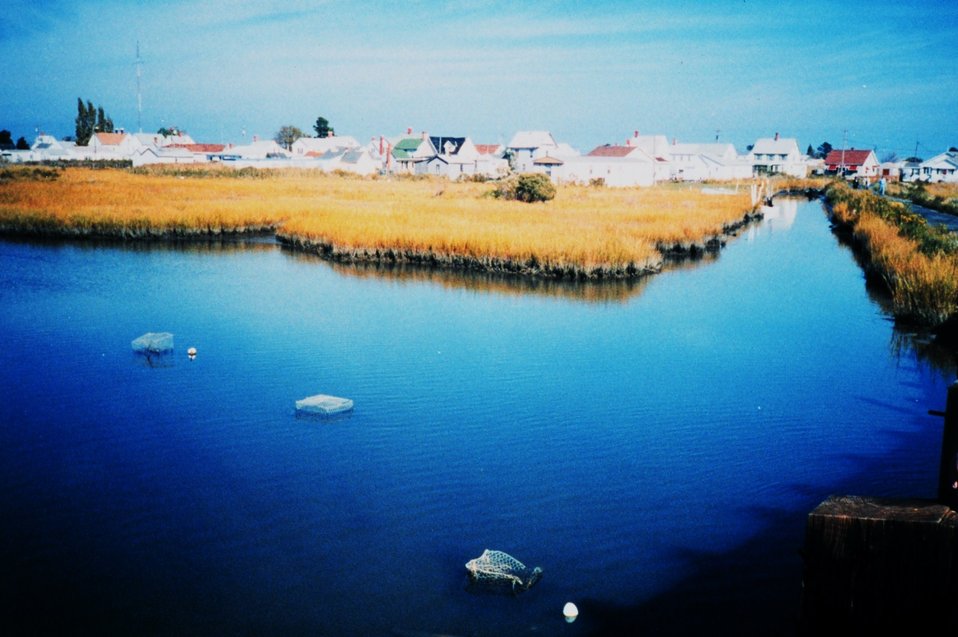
Crab pots in a channel